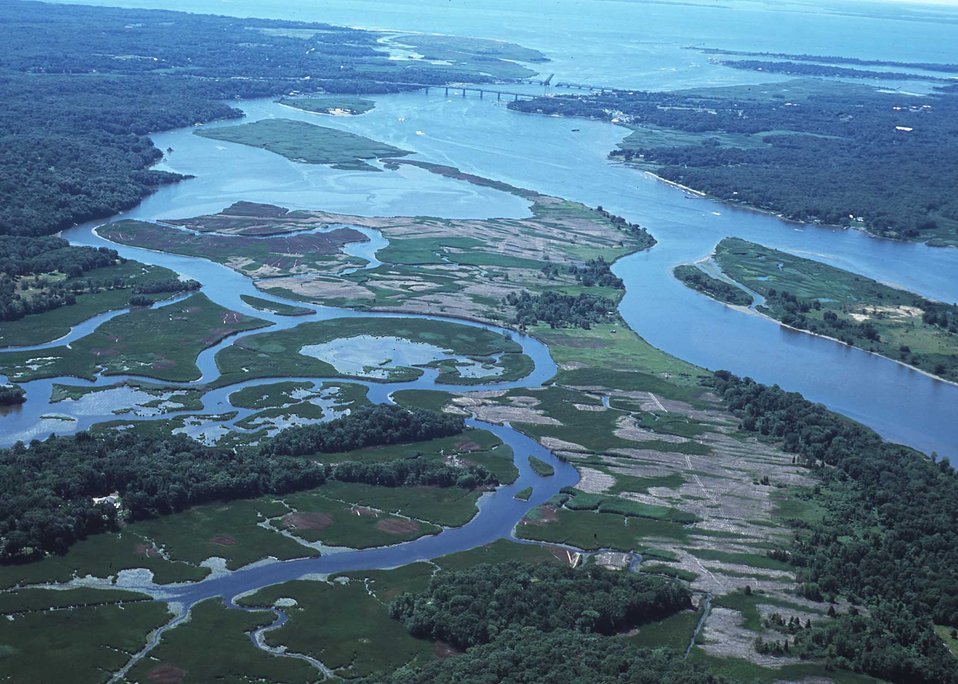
Tideland habitat undergoing invasive plant control (light colored areas) and native plant community restoration at the mouth of the Connecticut River.